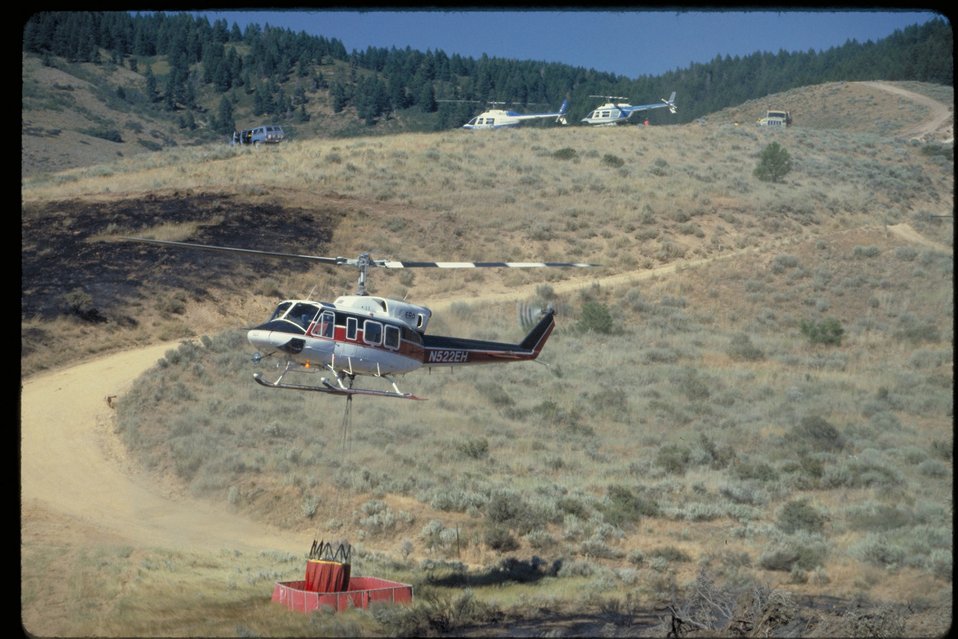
Helicopter Loading water bucket Foothills fire Boise Front Four Rivers Field Office LSRD Lower Snake River District